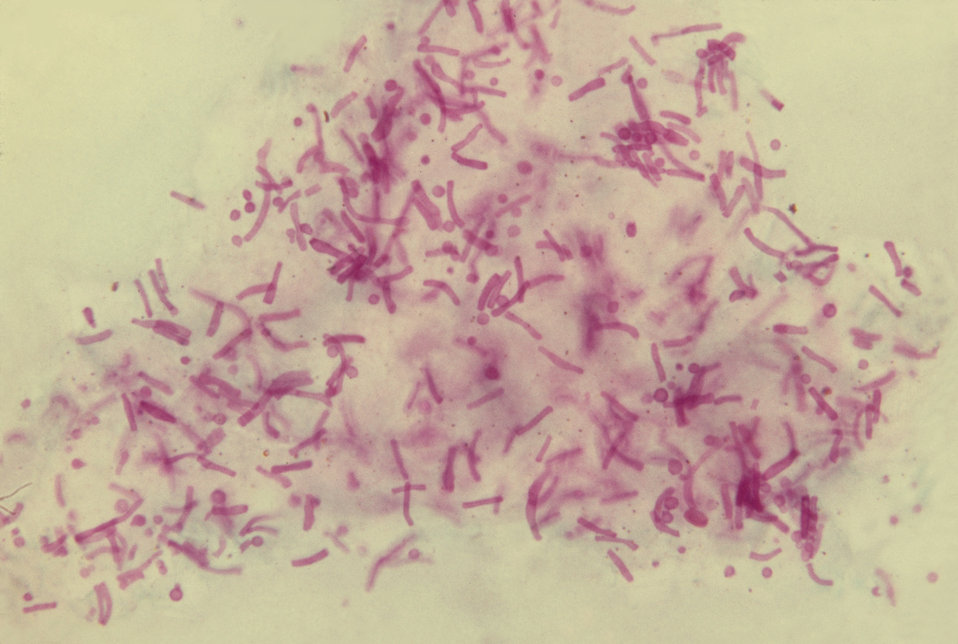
This photomicrograph of a skin scale reveals the presence of the fungus Malassezia furfur.